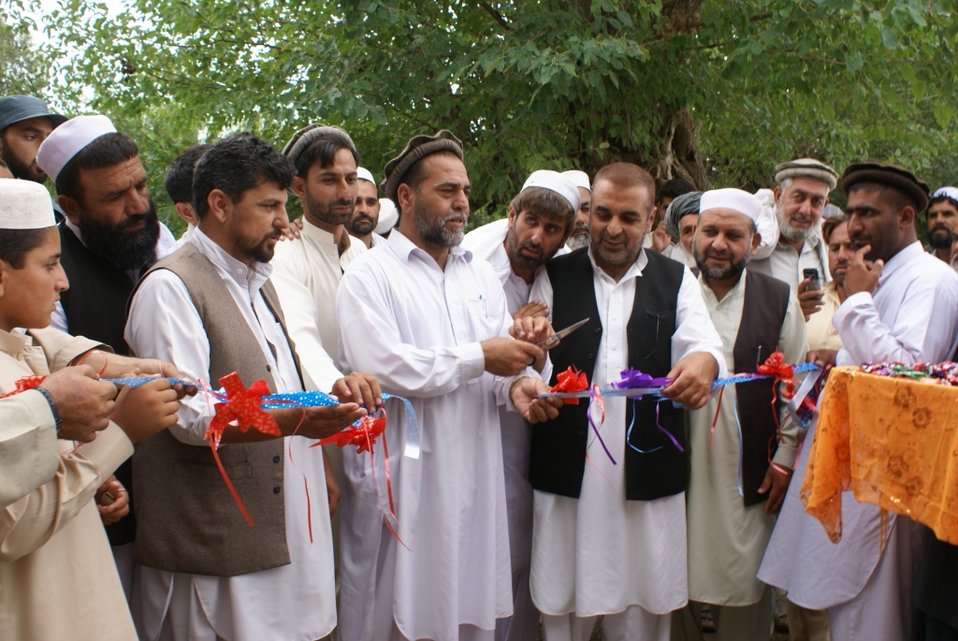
Baghcha Karez Rehabilitation in Shinwar District of Nangarhar